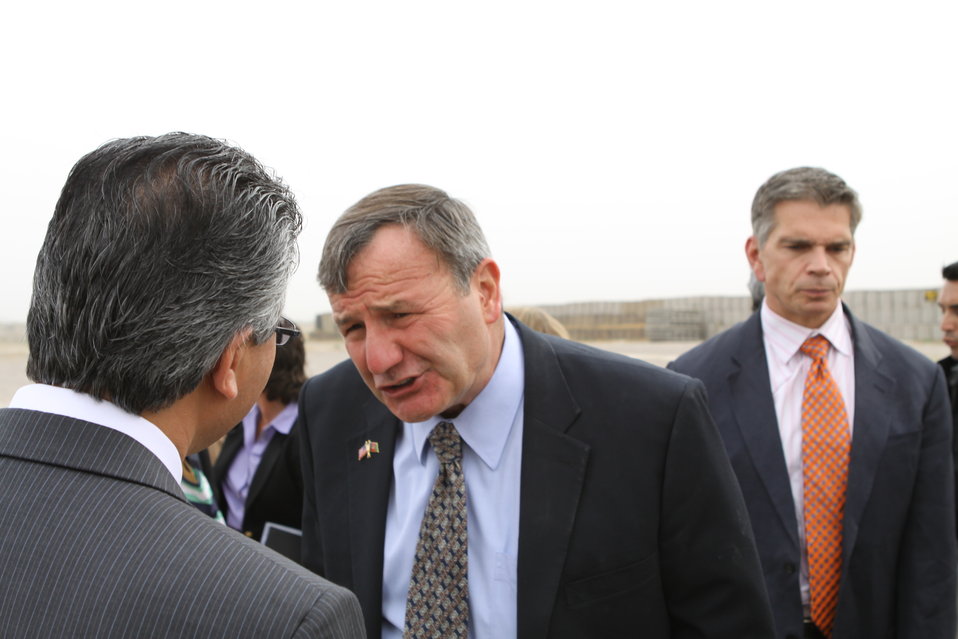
100525 Hirat Marble Conference 030